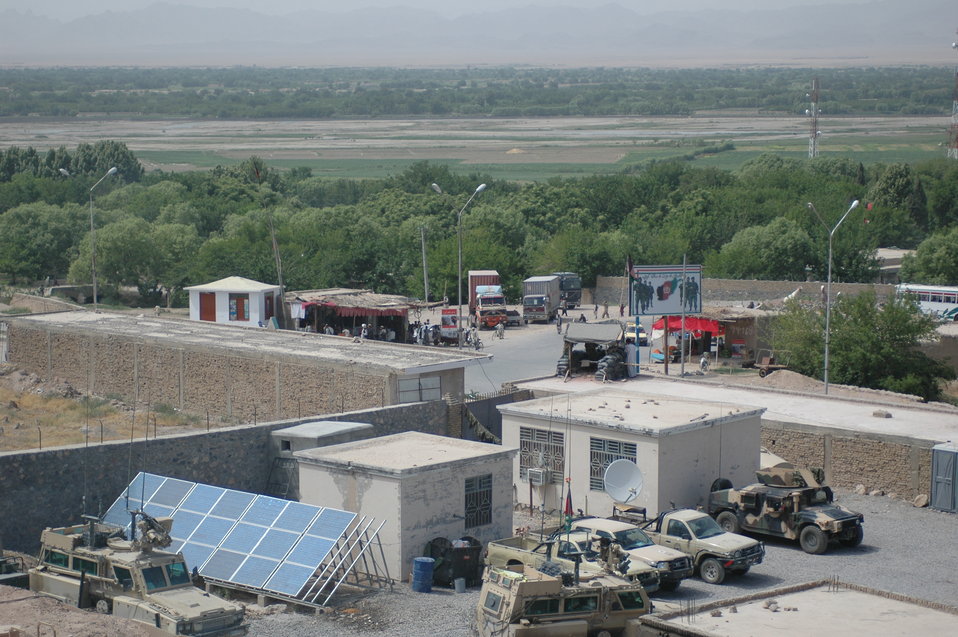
Dr Shah Visits Kandahar April 9, 2010